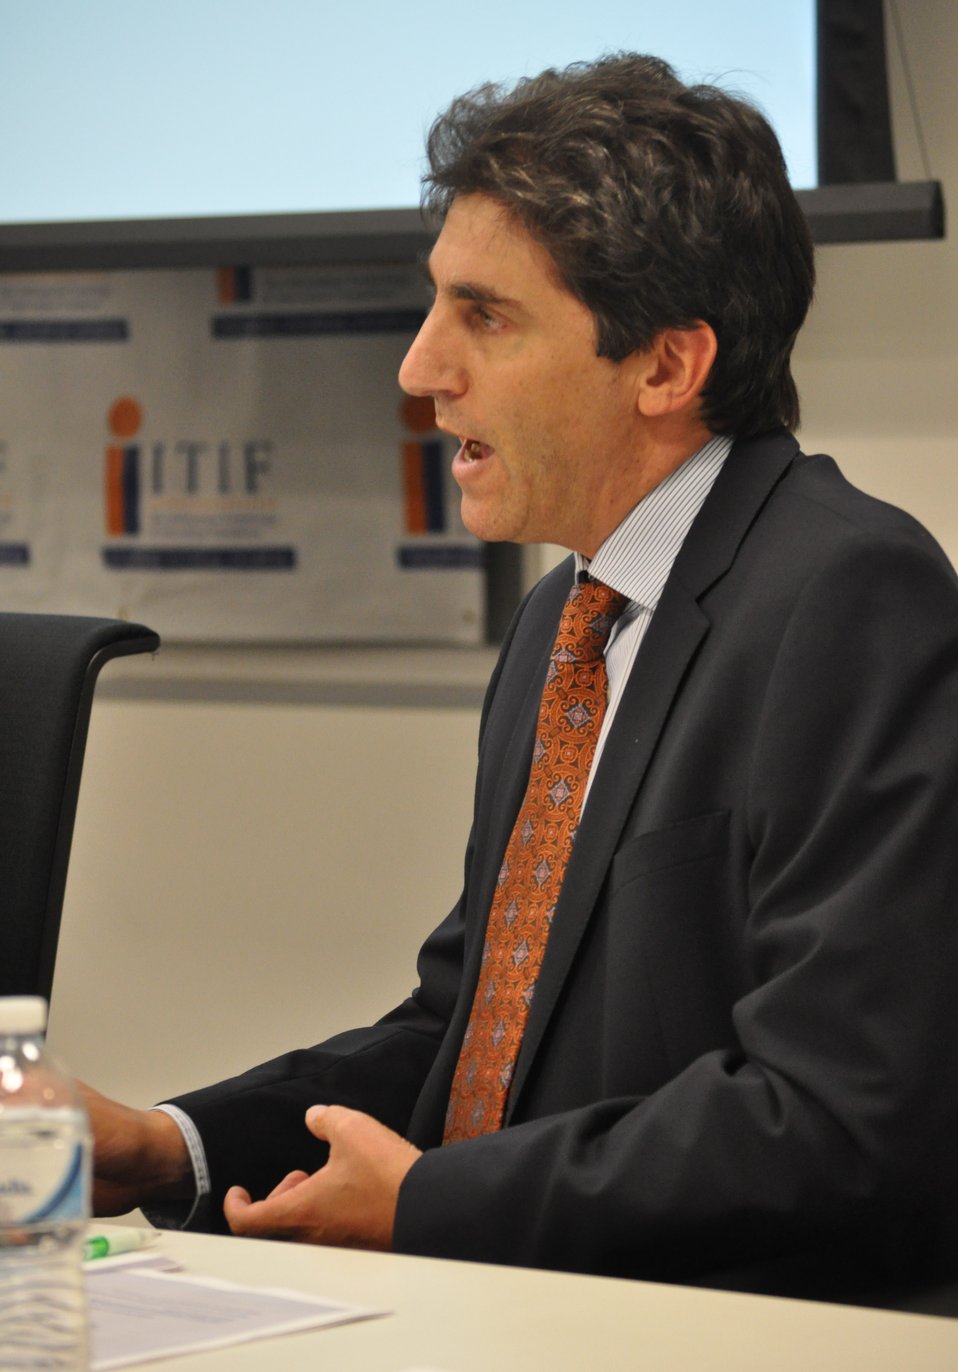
mHealth Task Force Findings and Recommendations Event - DSC 0673